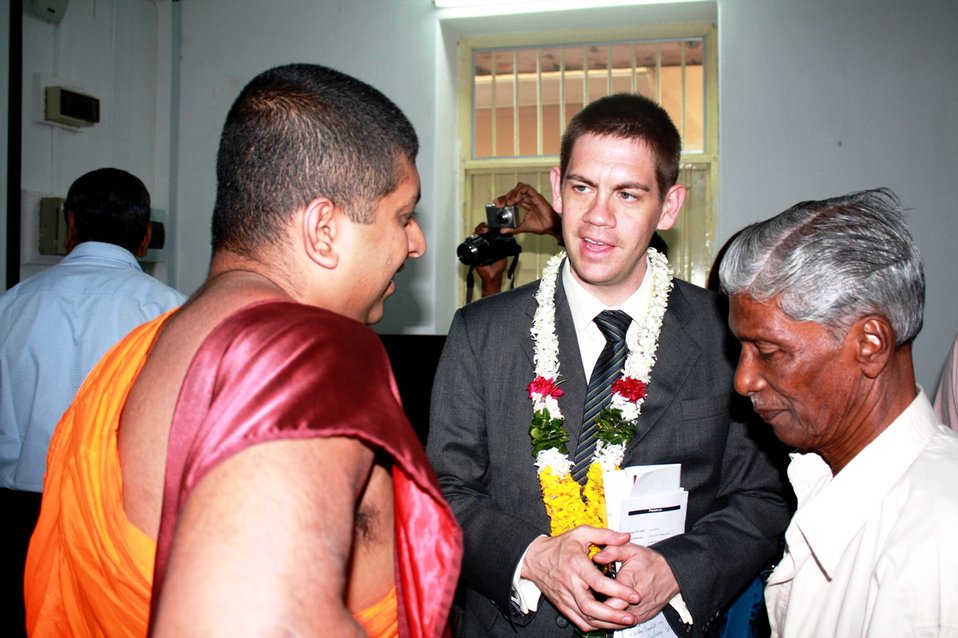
PAO Anderson Speaks With Sri Lankans

Public Affairs Officer Jeff Anderson speaks with Sri Lankans at the opening of the American Corner Jaffna in Colombo, Sri Lanka, on January 24, 2011.